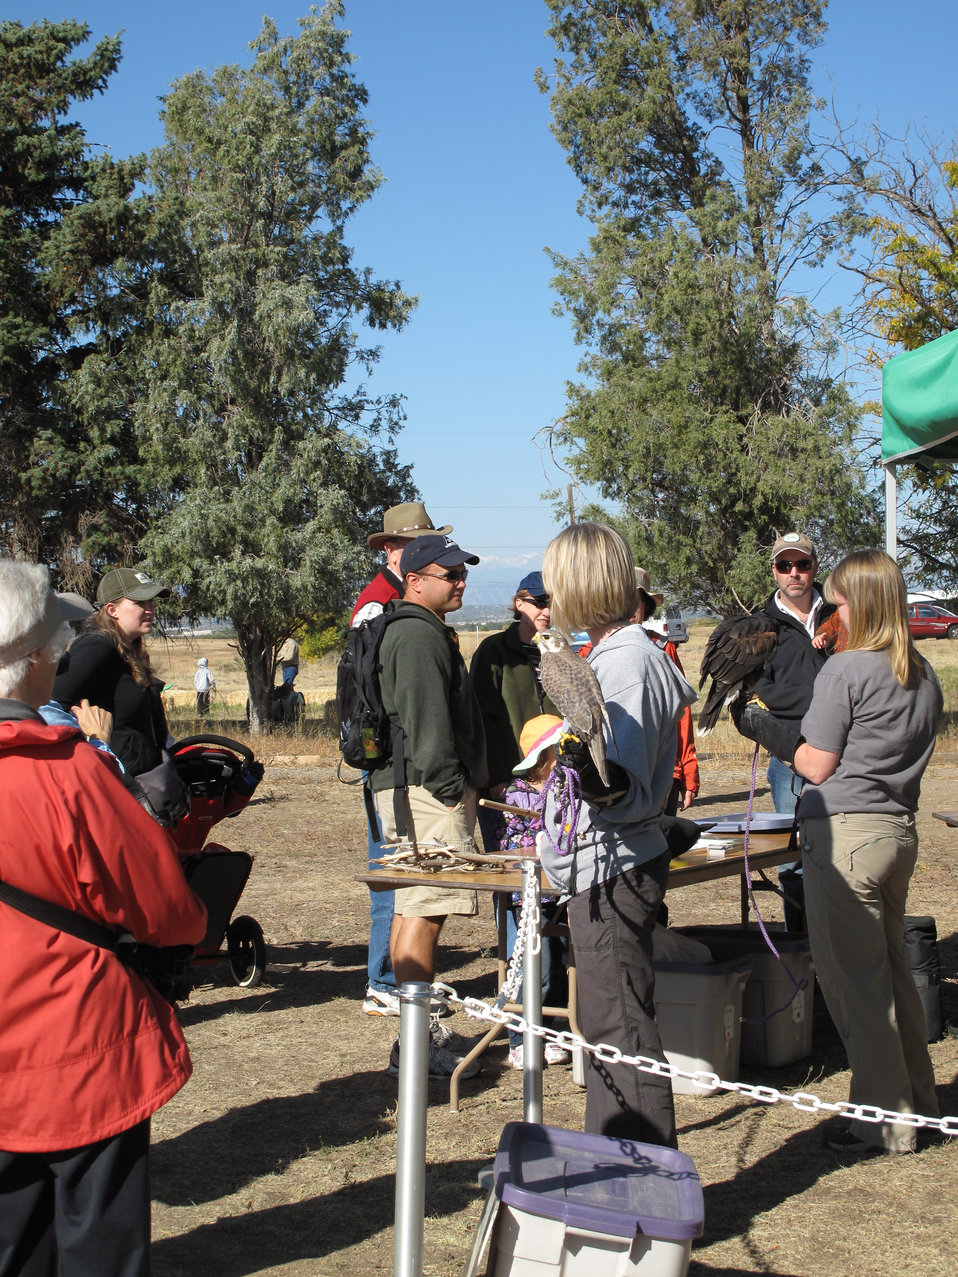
HawkQuest at the Refuge Round-Up 2010

HawkQuest providing an educational opportunity to understand and appreciate the interaction of wild living things in their natural environment and the importance of preserving the world in which they live'- HawkQuest.org